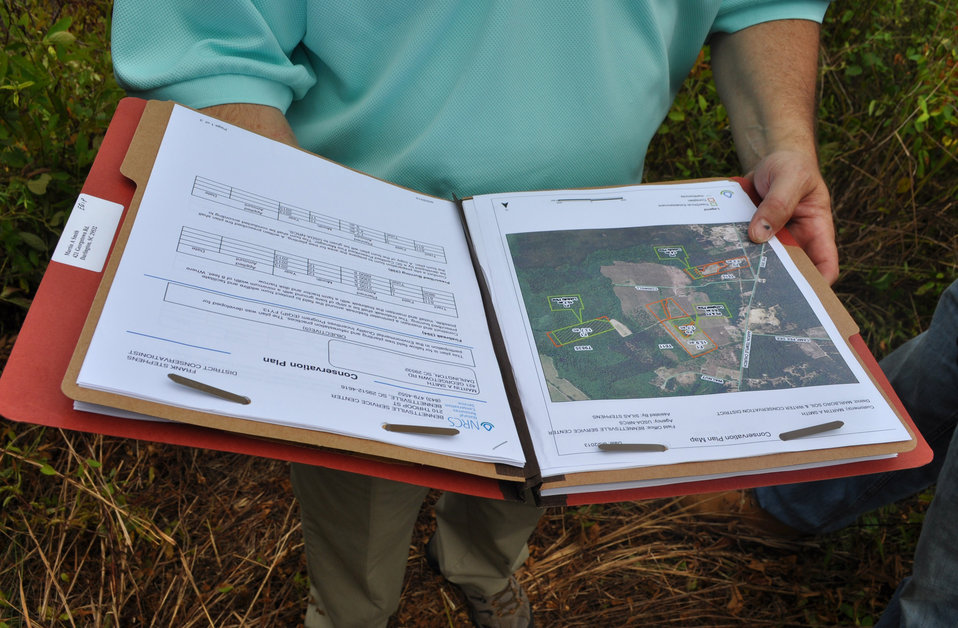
Conservation Plan

A forest management plan serves as a roadmap for implementing conservation on the Smith’s land.